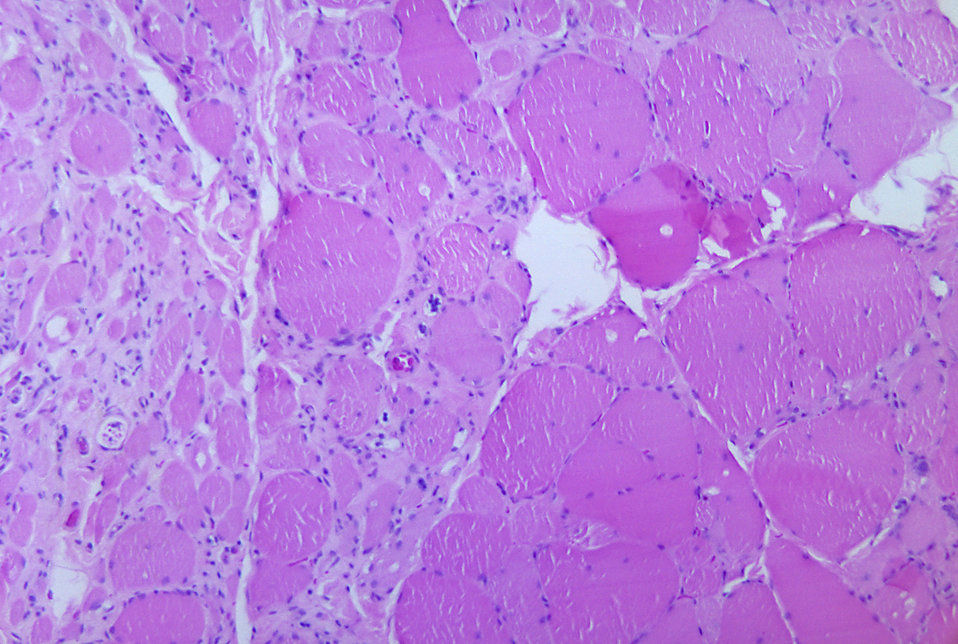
A photomicrograph of skeletal muscle tissue revealing myotonic dystrophic changes as a result of Polio Type III.